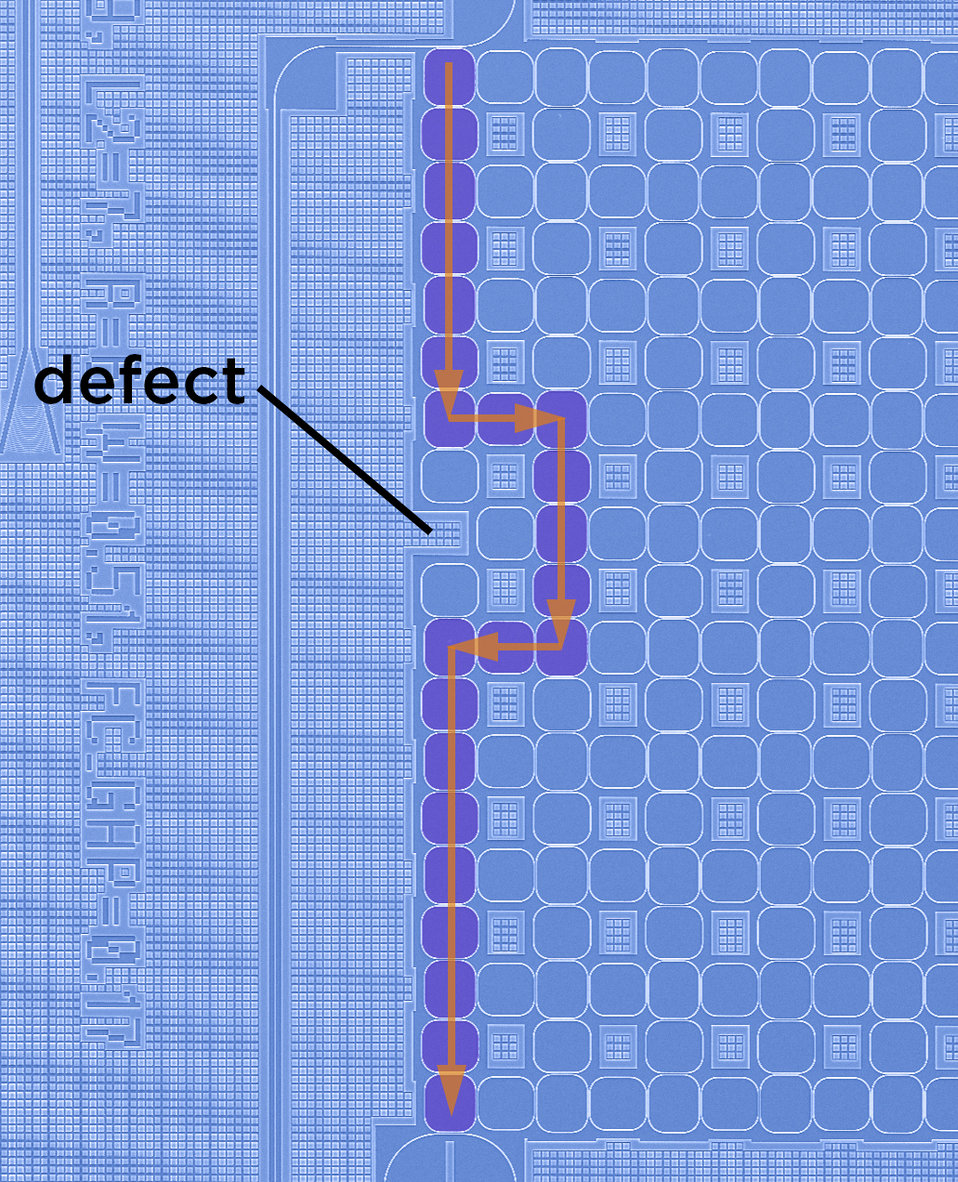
Silicon Rings

In this false-color scanning electron microscope image, the arrow shows the path light takes as it hops between silicon rings along the edge of the chip, successfully avoiding defects - in this case a missing ring.